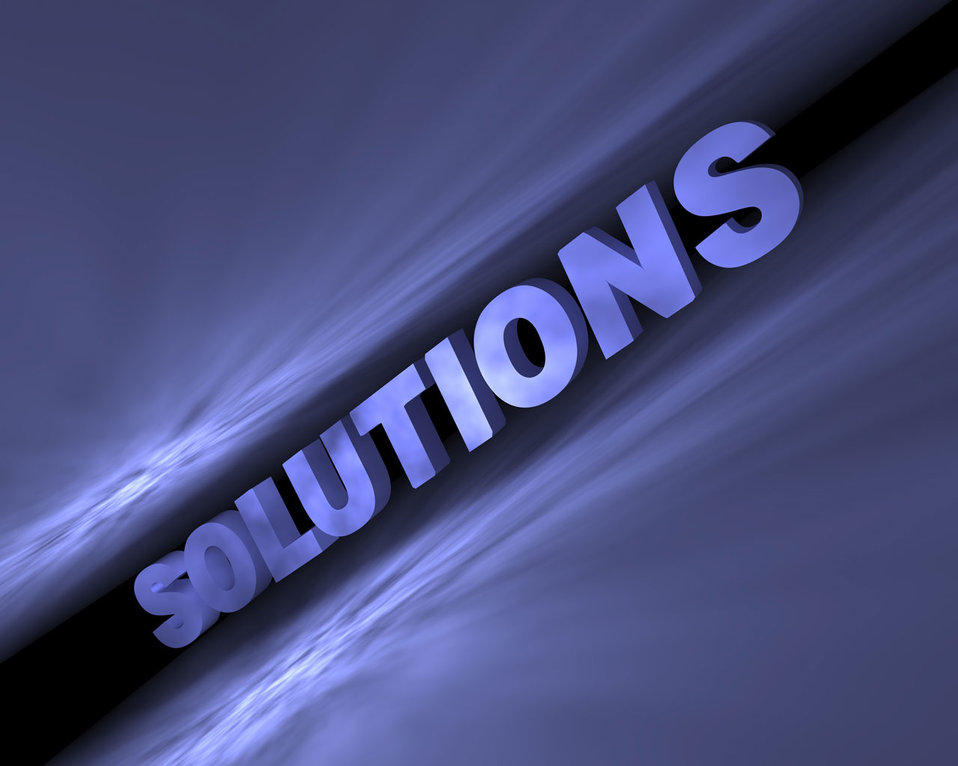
Solutions

Text 3d abstract lighting.